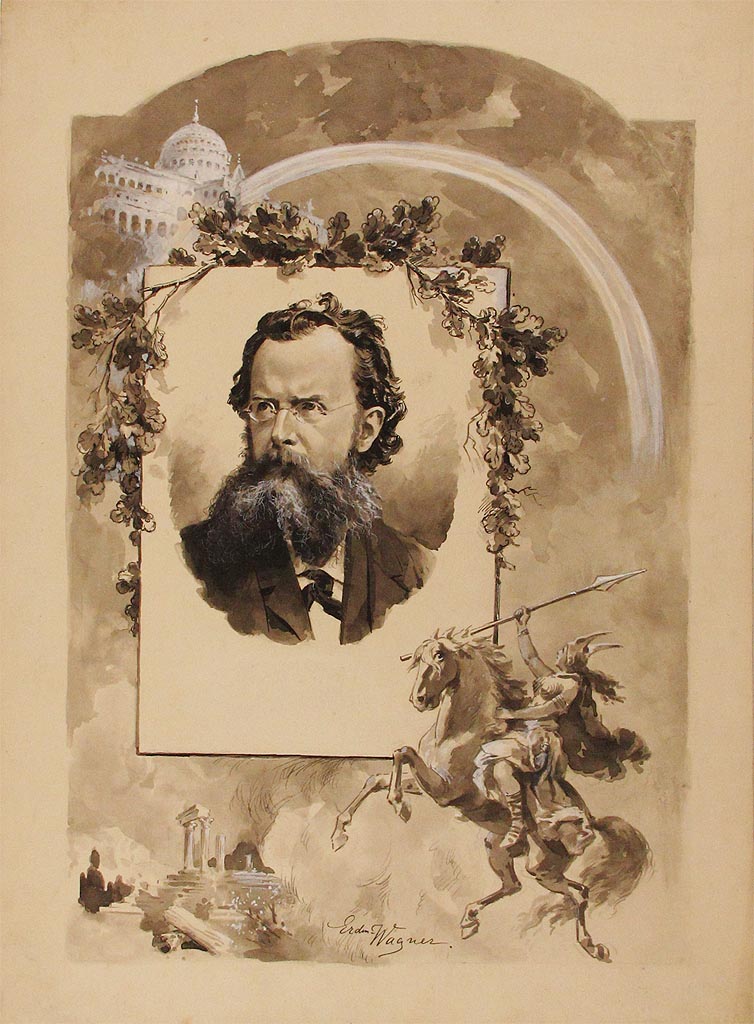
Porträt des Dichters Felix Dahn vor Architekturkulisse und berittener Kriegerin. Lavierte Tuschfederzeichnung in Sepiatönen, weiss gehöht. Bl. 45,5 x 33 cm